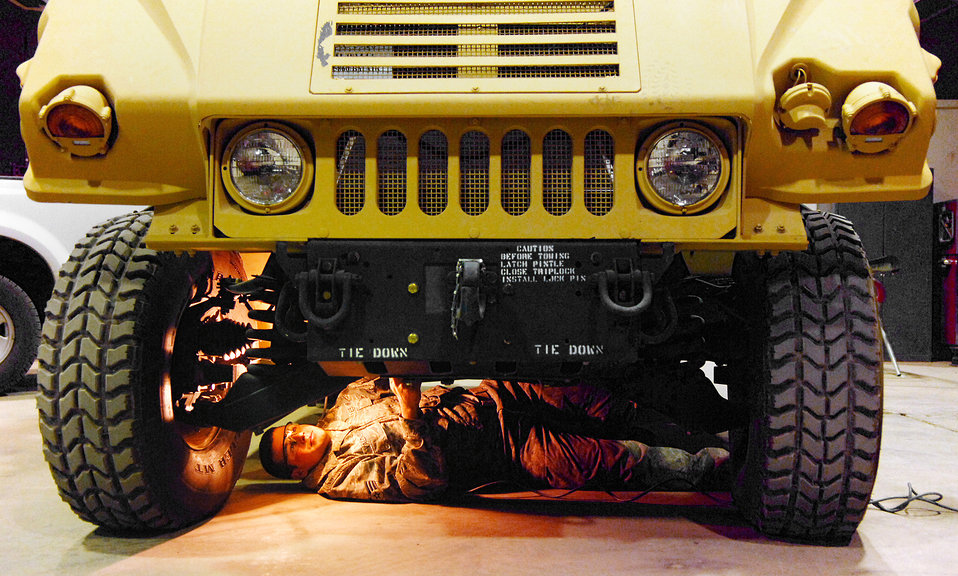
What's going on?

Senior Airman James Valdiviez inspects the undercarriage of a new Humvee at Balad Air Base, Iraq. The Humvees must be fully operational before they are released to the unit. Airman Valdiviez is deployed from Eielson Air Force Base, Alaska.